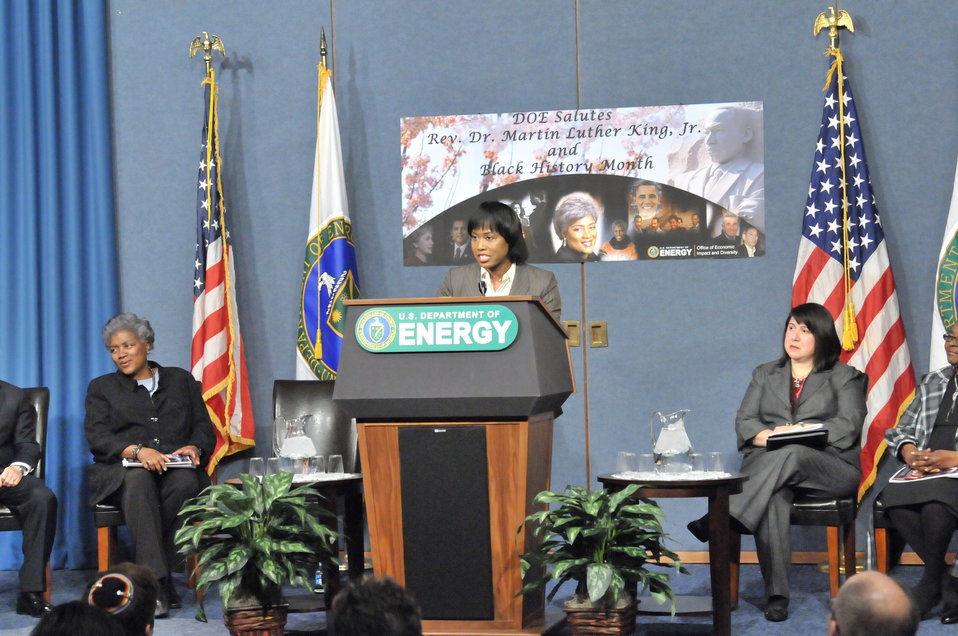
DEPARTMENT OF ENERGY -MARTIN LUTHER KING / BLACK HISTORY MONTH COMMEMORATIVE PROGRAM WITH DOE SECRETARY E. MONIZ IN ATTENDANCE